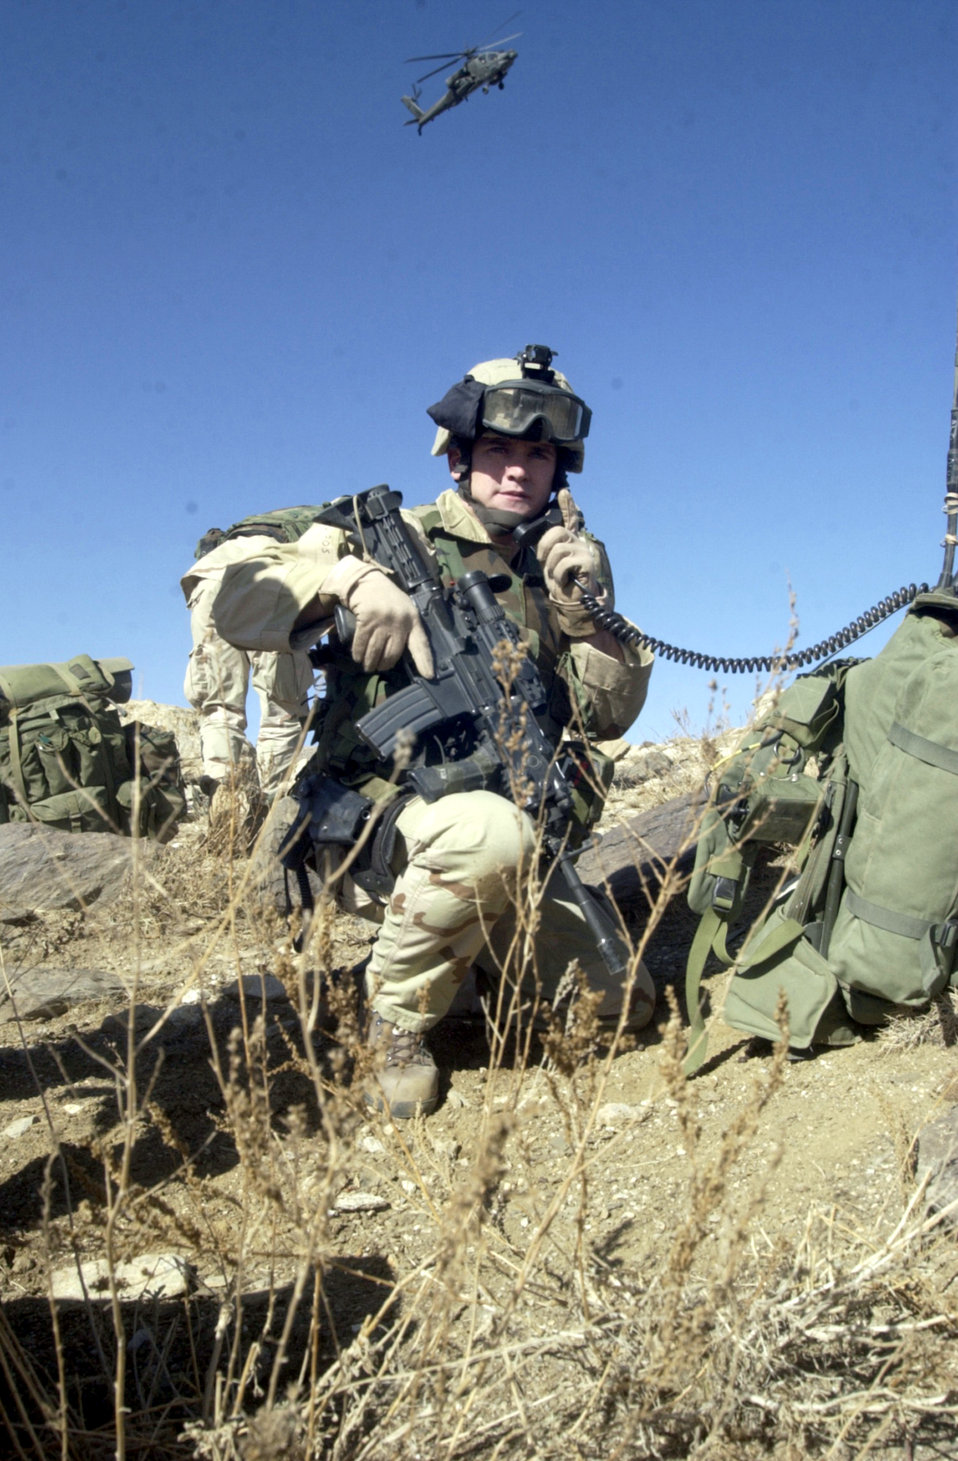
Tactical controllers stand strong

BAGRAM AIR BASE, Afghanistan (AFPN) -- Airman 1st Class James Blair coordinates air cover for Army 10th Mountain Division light-infantry soldiers during recent operations in the Sroghar Mountains. Airman Blair and other tactical air control party airmen are serving with special operations forces in operations Enduring and Iraqi Freedom. Airman Blair is deployed from Fort Drum, N.Y.